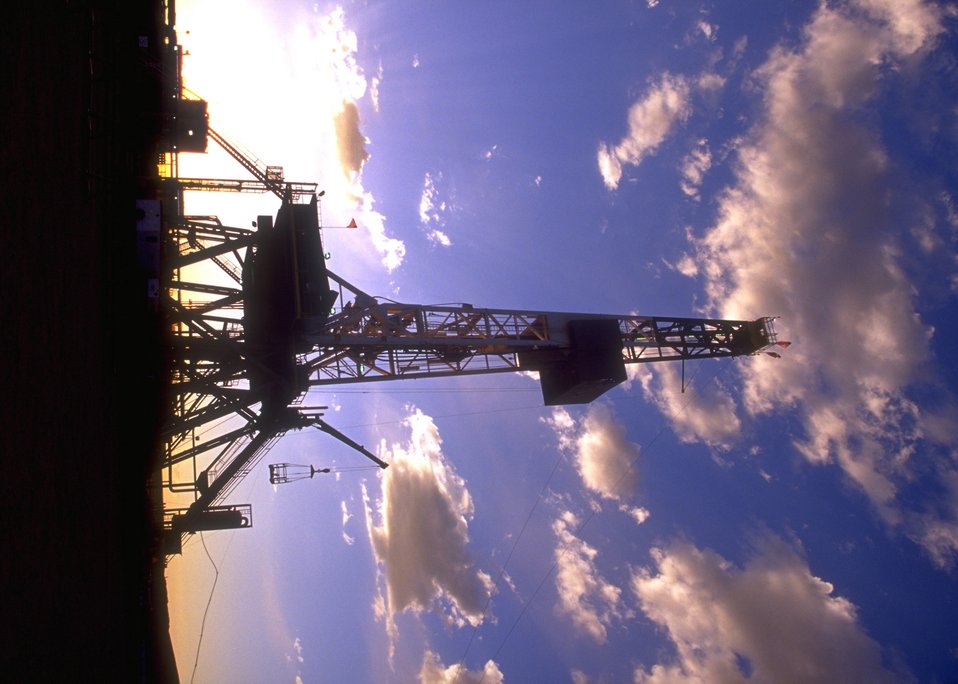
Burlington Northern deep well rig, Casper Field Office.